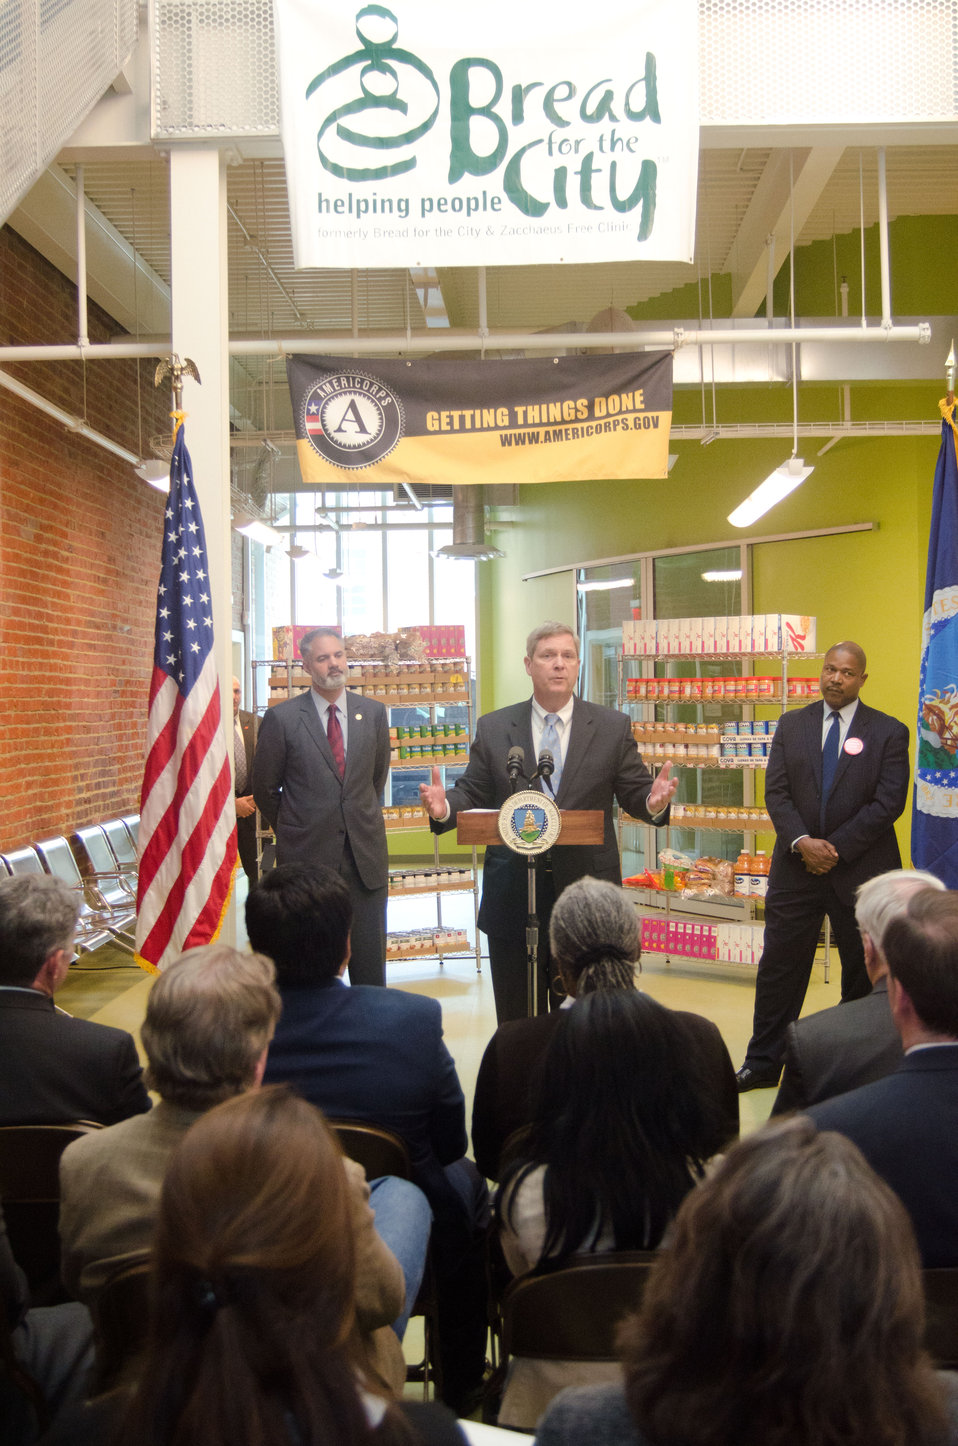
Agriculture Secretary Tom Vilsack announced on Thursday April 29, 20ll in Washington, DC, a commitment to ending childhood hunger. Secretary Vilsack presented USDA's resources to champion the end of hunger and create innovative partnerships to address hunger, especially among children. Vilsack announced that USDA has made available to individuals, groups and communities the tools and technical assistants to become champions themselves in ending childhood hunger. He shared the web address www.fns.usda.gov/ech, where people can participate in an online commitment for that cause and identified actions that can be taken. When a person registers as a Stakeholder, they, their group or community can be kept informed and have input about ending childhood hunger. A follow-on link to www.serve.gov can assist a person in finding volunteer opportunities in their area; register an unlisted program; share a story about a volunteer project or personal experience; and help get the word out about United We Serve.